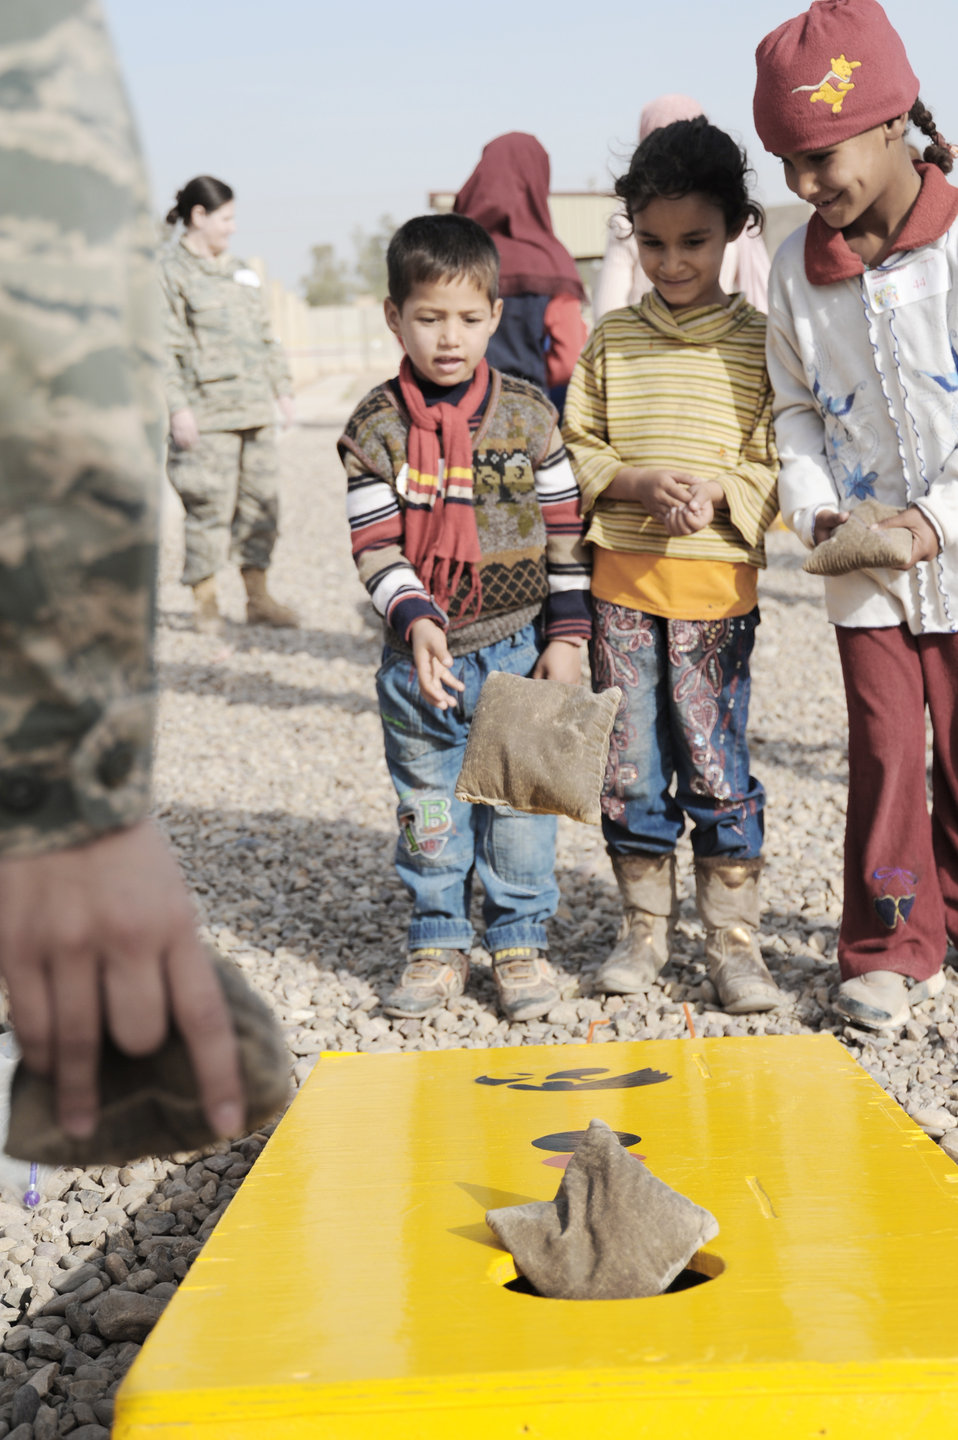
Iraqi kids, U.S. servicemembers enjoy another day of fun, education

Iraqi children play a bean bag game during Iraqi Kids Day Dec. 19, 2009, at Joint Base Balad, Iraq. The event marked the fifth of its kind in the last four months, each one focused on educating and entertaining local youths.